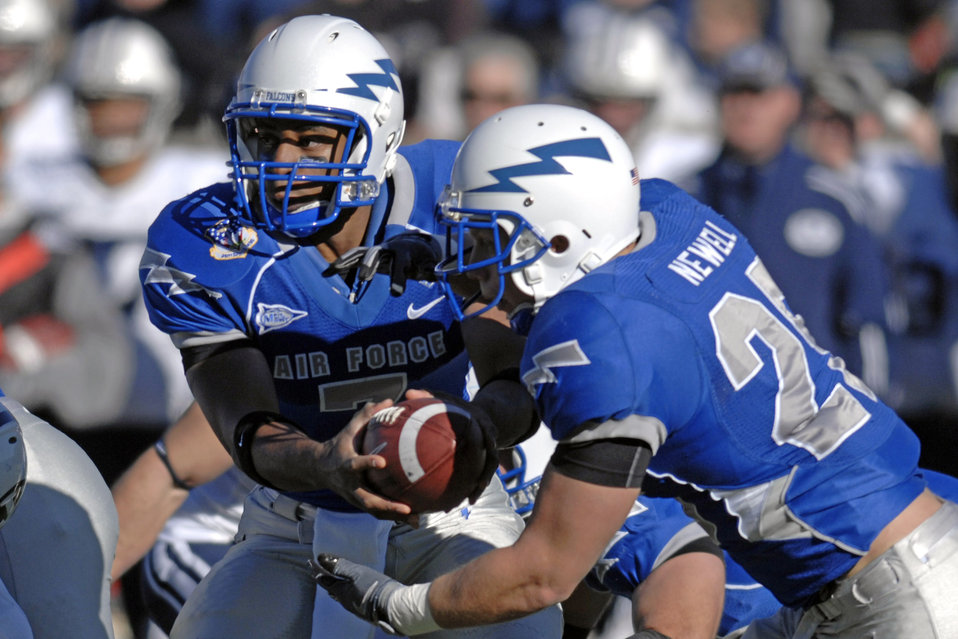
Rough third quarter ground Falcons

Air Force freshman quarterback Tim Jefferson hands off to Falcon fullback Todd Newell during the 38-24 loss against Brigham Young University Nov. 15 at Falcon Stadium in Colorado. Newell rushed for 116 yards, which is his second career 100-plus yard game.